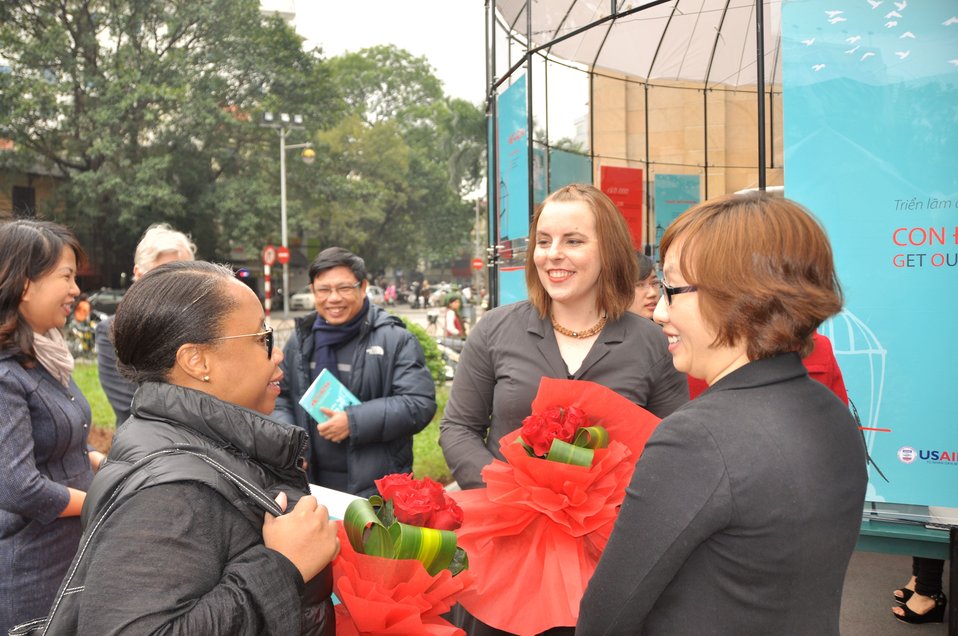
Photo Exhibition Launch

USAID/Vietnam